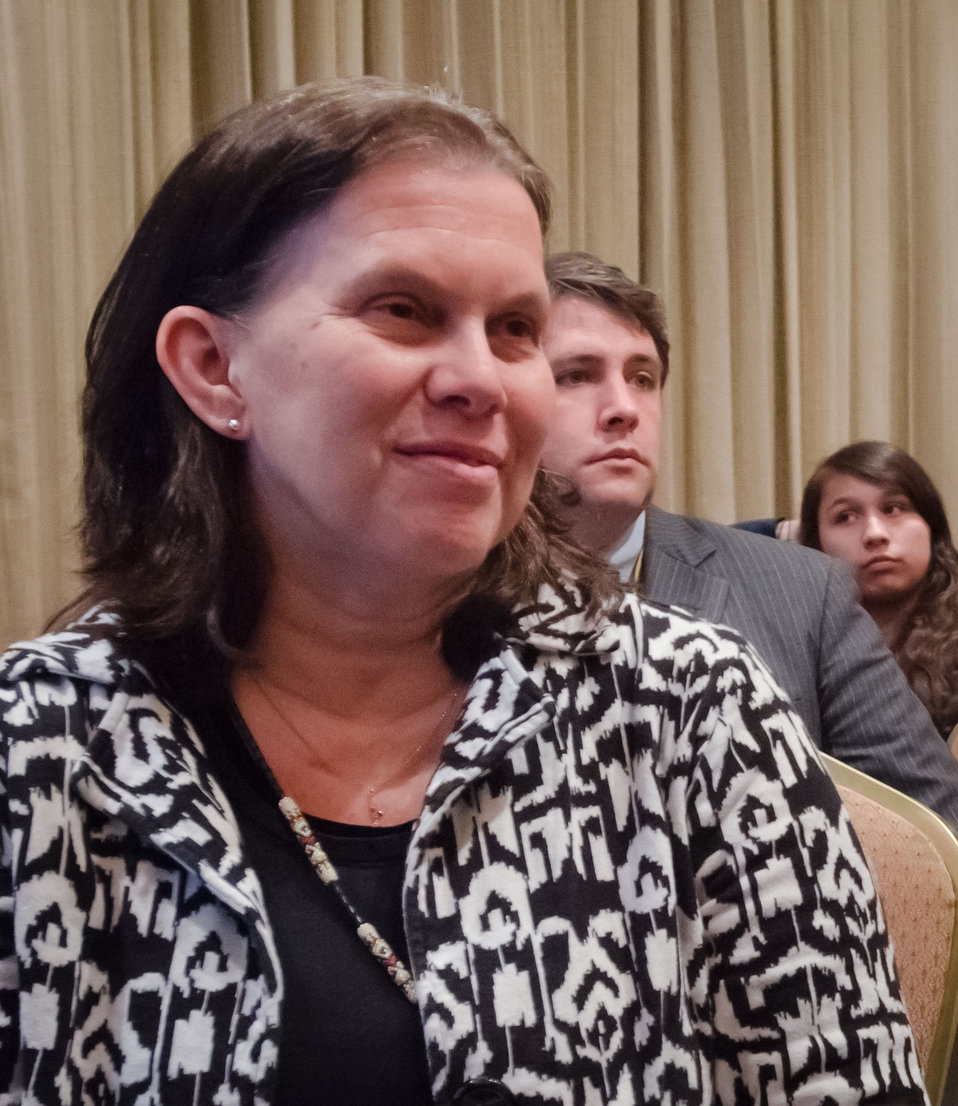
Agriculture Office of Tribal Relations Senior Advisor to the Secretary Janie Hipp (black and white coat) listened to Agriculture Secretary Tom Vilsack speech at the National Congress of American Indians Tribal Nations Legislative Summit in Washington, D. C. on Wednesday March 7, 2012. Secretary Vilsack made improving relations with Native American Tribes a priority by creating the Office of Tribal Relations, led by Janie Hipp. This supports his directive to make USDA agencies more aware of tribal issues and engage in Tribal consultation and collaboration. Secretary Vilsack reiterated USDA’s support to native communities with financial support for electric, broadband and wastewater infrastructure, and provides native families and businesses with home loans and business grants. Secretary Vilsack emphasized USDA’s participation in the First Lady’s Lets Move in Indian Country initiative to combat childhood obesity in tribal communities.